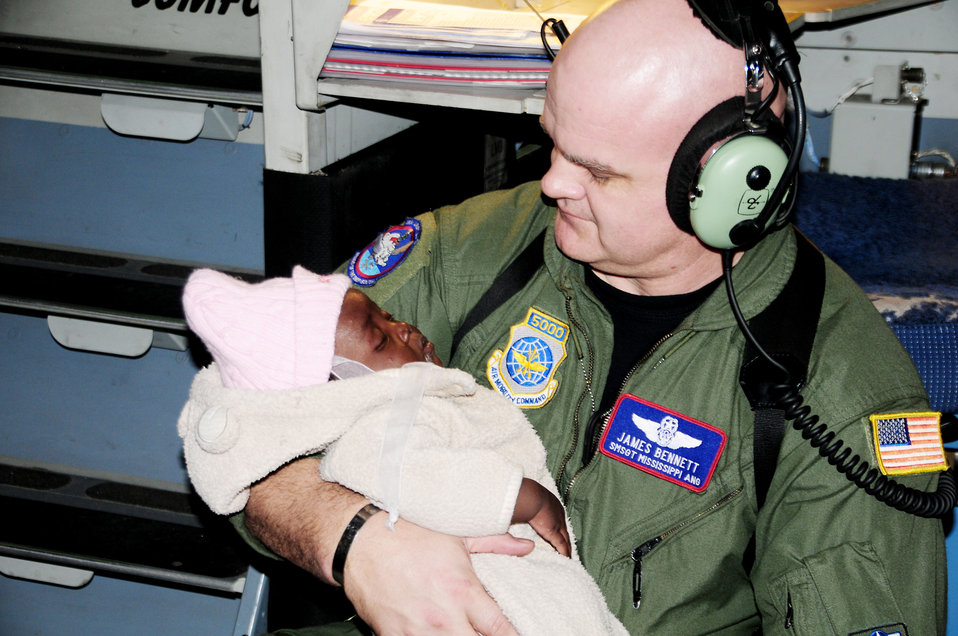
Air Force coordination team joins Joint Task Force-Haiti

Senior Master Sgt. James Bennett holds a Haitian baby for a mother who was asleep from exhaustion Jan. 21, 2010, at the Toussaint L'Ouverture International Airport in Port-au-Prince, Haiti. Sergeant Bennett is a C-17 Globemaster III loadmaster with the Air National Guard.